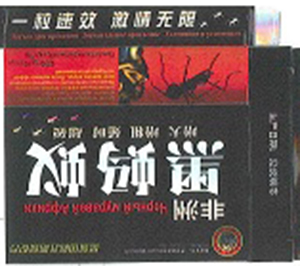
20140501163152678pic1 Page 5